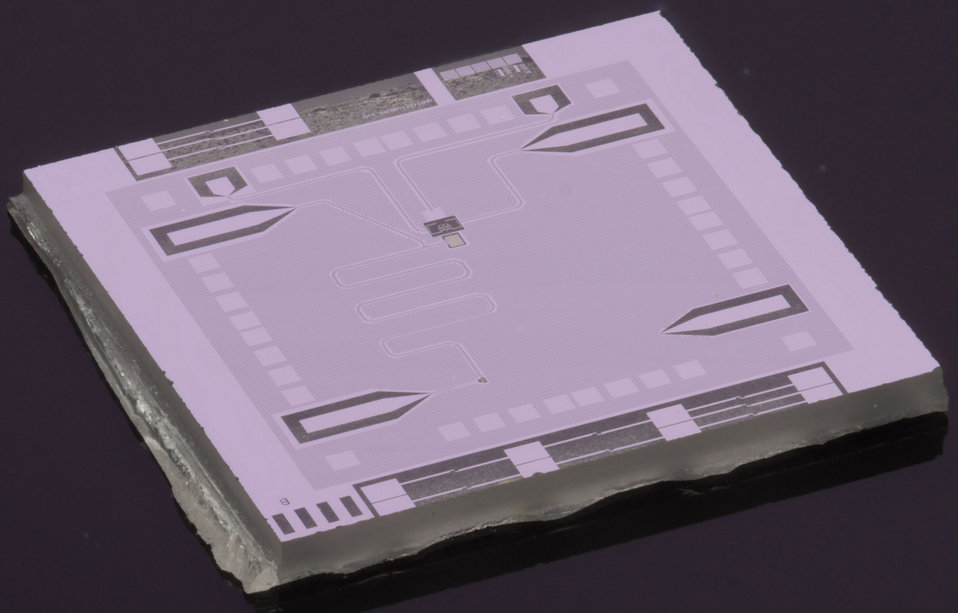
Optics

NIST's 'optics table on a chip' is a superconducting circuit on a square sapphire chip about 6 millimeters wide. Scientists use the chip to place a single microwave photon in two frequencies, or colors, at the same time. The photon is prepared by an 'artificial atom' (small yellow square) in the middle of the chip. The arrow shape at the lower left connects to a transmission line used to tune the SQUID (small black area near the point of the arrow). The SQUID couples together two resonant frequencies of the cavity (meandering line), and the photon oscillates between different superpositions of those frequencies.

For more information see the NIST Tech Beat story.